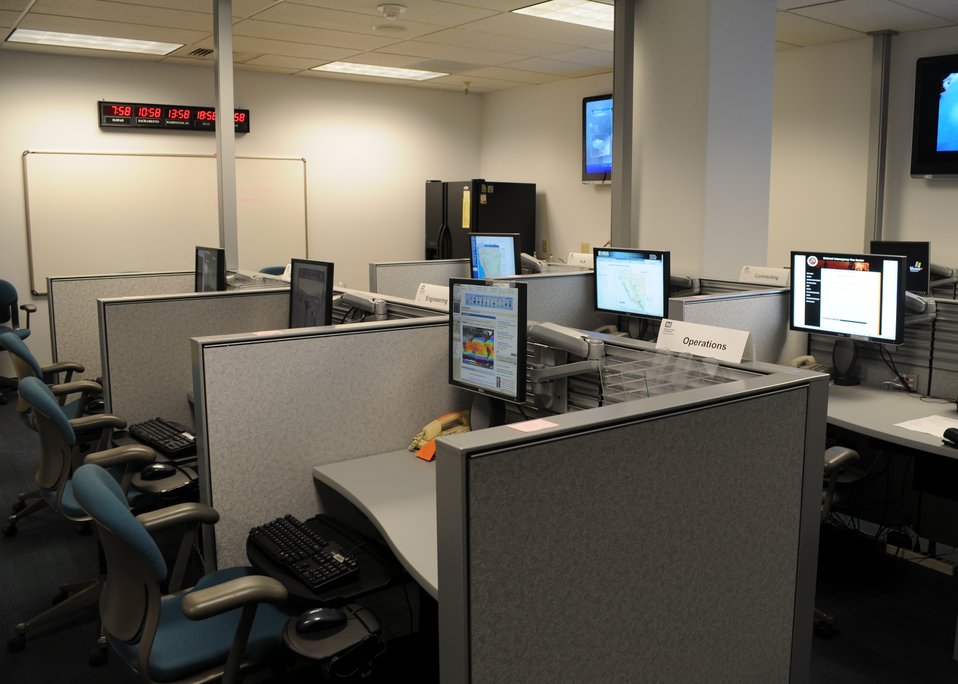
SACRAMENTO, Calif. – A view of the workstations at the U.S. Army Corps of Engineers Sacramento District’s new emergency operations center, housed at its headquarters building here. The new EOC was showcased to district employees during an open house event Jan. 26, and is designed to support the district’s around-the-clock response to disasters.
“We're trying to publicize the knowledge that the EOC is here, in the building, and to give people an idea of what we do on a daily basis,” said Christy Jones, a program manager with the Sacramento District’s readiness section.